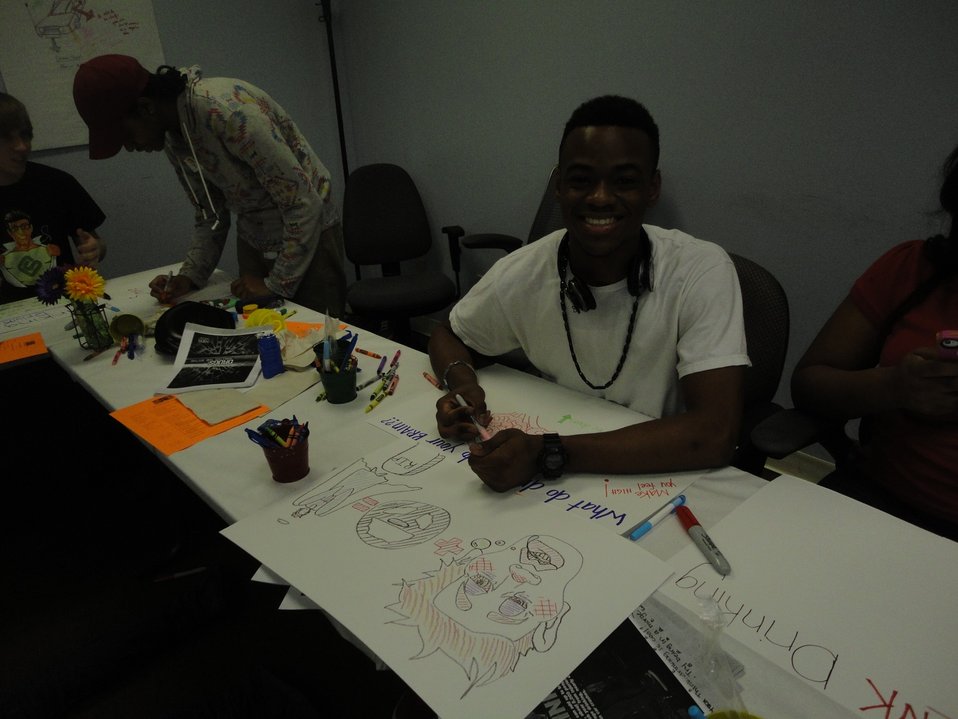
DREAM's, MS Student Advisory Board of Youth Highway Safety NDFW 2013

Mississippi High School Students participate in NDFW 2013 events.